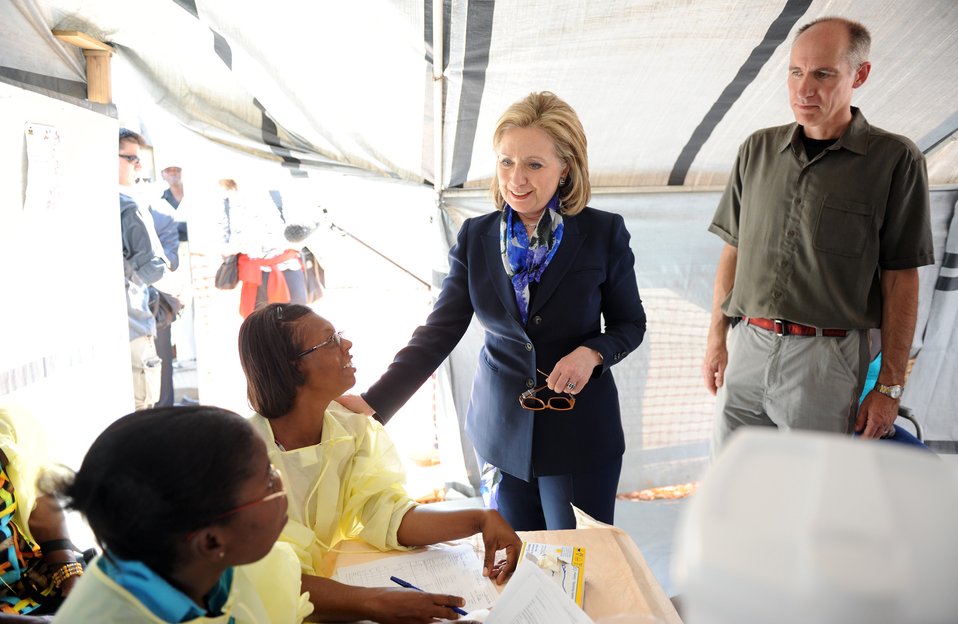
Secretary Clinton Speaks With Staff at a USAID Cholera Treatment Center

U.S. Secretary of State Hillary Clinton speaks with the staff, left, at a USAID cholera treatment center, along with Steve Smith, right, with the health sector of the U.S. Embassy Port-au-Prince on January 30, 2011, in Haiti.